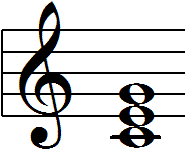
The en:C-major triad. Made using en:Capella notation program and en:Microsoft Paint. en:Category:Music images